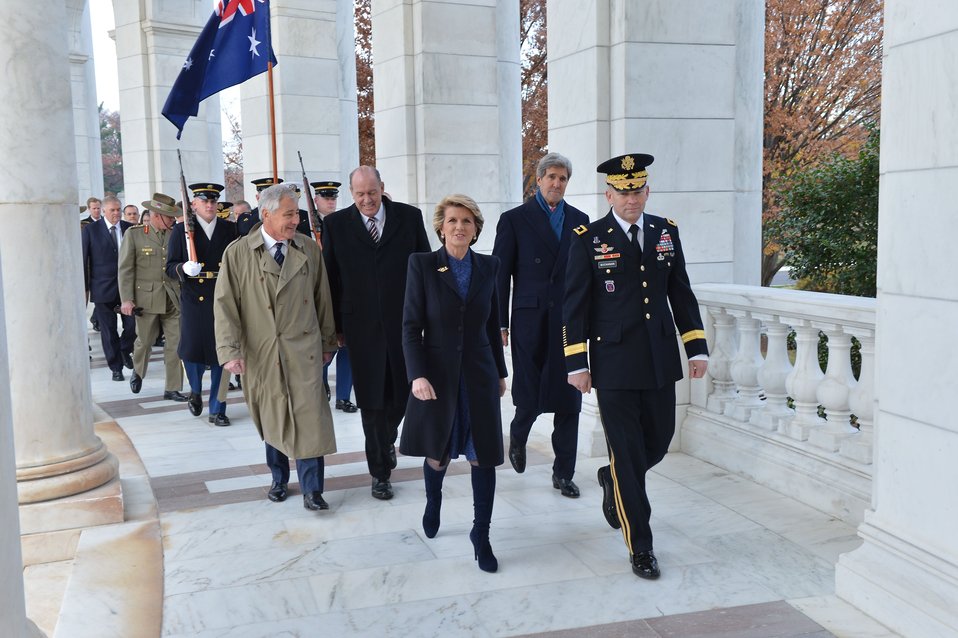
Secretaries Kerry, Hagel and Australian Ministers Bishop, Johnston Walk to the Tomb of the Unknown Soldier

U.S. Secretary of State John Kerry, U.S. Secretary of Defense Chuck Hagel, Australian Foreign Minister Julie Bishop, and Australian Defence Minister David Johnston walk to the Tomb of Unknown Soldier to participate in a wreath laying ceremony at Arlington National Cemetery in Arlington, Virginia, on November 20, 2013.